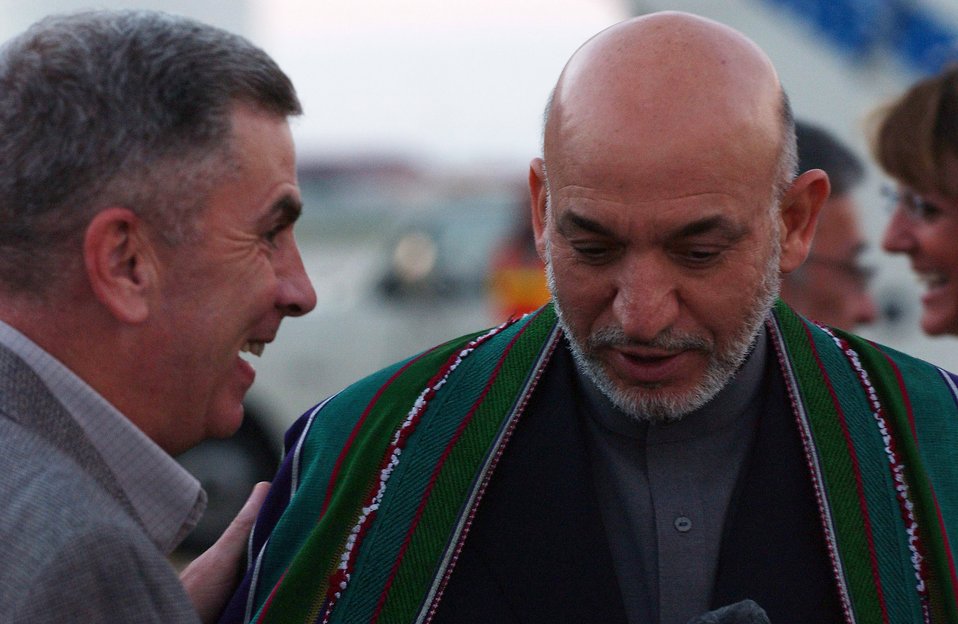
President hosts Pakistani, Afghan presidents

Afghanistan's President Hamid Karzai (right) talks with Army Gen. John Abizaid Sept. 26 shortly after landing at MacDill Air Force Base in Tampa, Fla. President Karzai visited with General Abizaid, the commander of United States Central Command, during his visit to the United States this week.